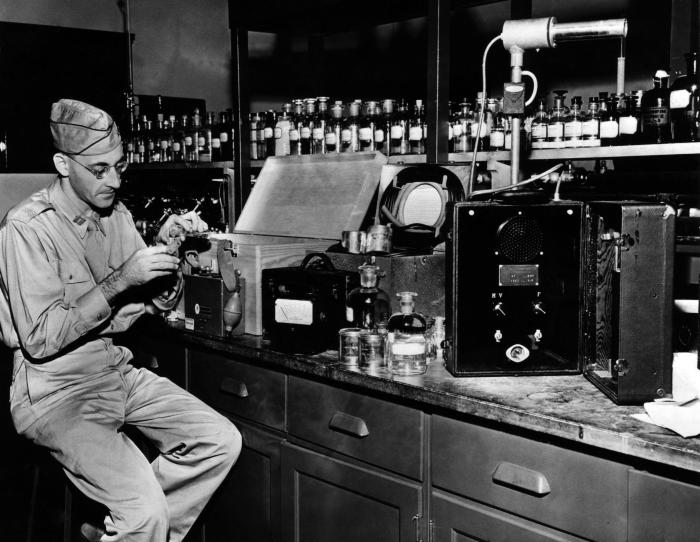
Provided by the Center for Disease Control's (CDC), National Institute for Occupational Safety and Health (NIOSH), this historic 1943 image depicted a Public Health Service (PHS) officer as he was examining the instruments to be used in the measurement of airborne TNT (trinitrotoluene) concentrations (see PHIL 9776 and 9777). A poisonous chemical, TNT will irritate the skin upon contact, and actually will change the skin's color to a bright yellow-orange. Prolonged exposure leads to liver damage, anemia, enlargement of the spleen, and a compromised immune system, to name a few of its negative effects. Trinitrotoluene is also a known carcinogen.